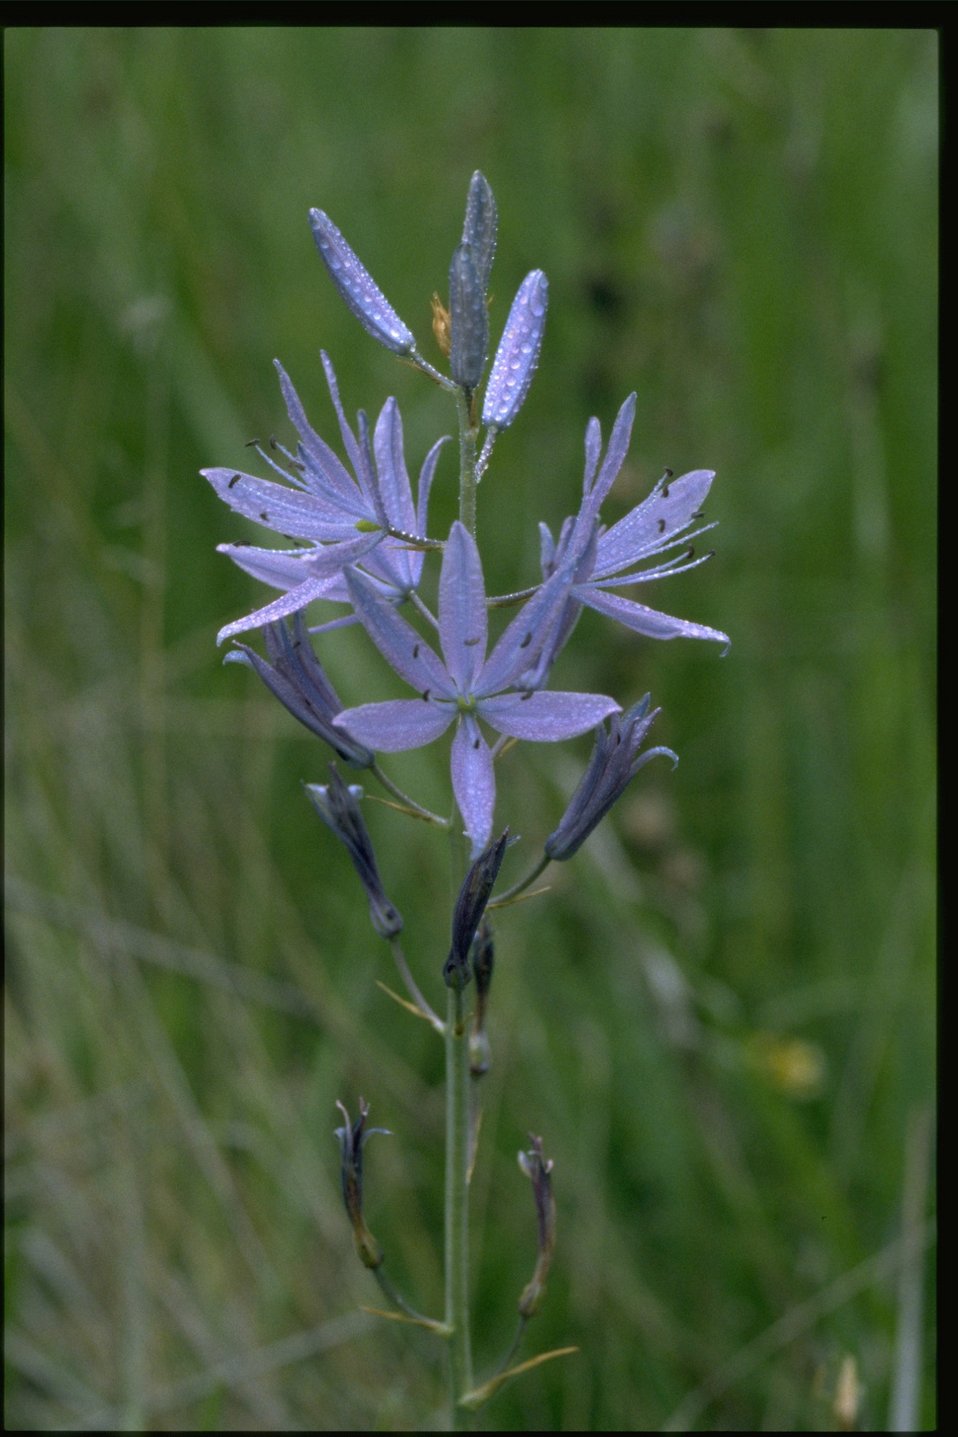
Medium shot of Camassia quamash.